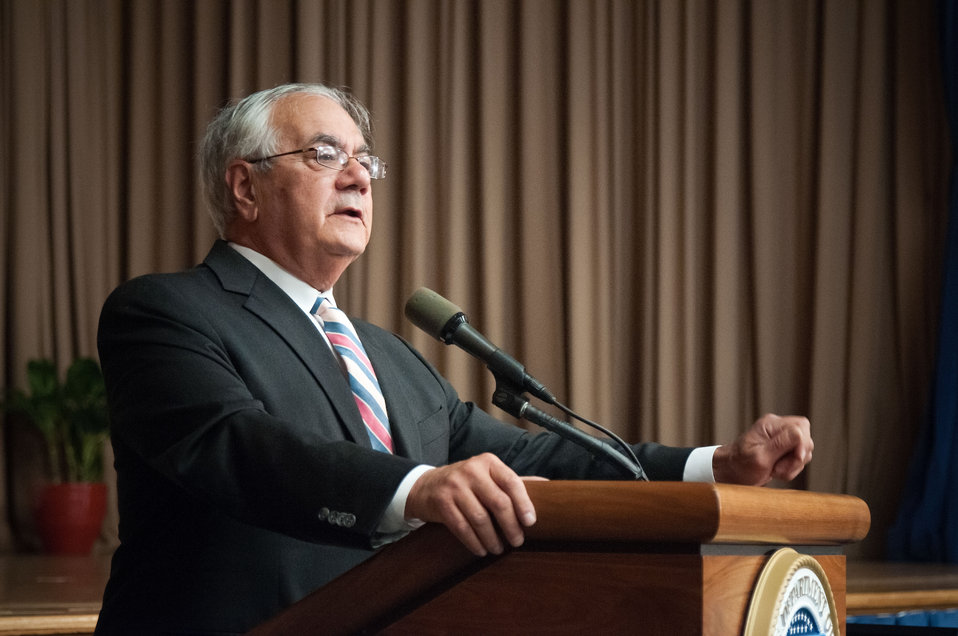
Rep. Barney Frank, First Congressional District of Massachusetts and Ranking Member of the House Financial Services Committee was the keynote speaker at the Lesbian, Gay, Bisexual and Transgender (LGBT) Pride Observance, “The Sum of Us: Lesbian, Gay, Bisexual and Transgender Pioneers” at the Lesbian, Gay, Bisexual and Transgender (LGBT) Pride Observance, “The Sum of Us: Lesbian, Gay, Bisexual and Transgender Pioneers” at the United States Department of Agriculture in Washington, D.C., Thursday, June 7, 2012.